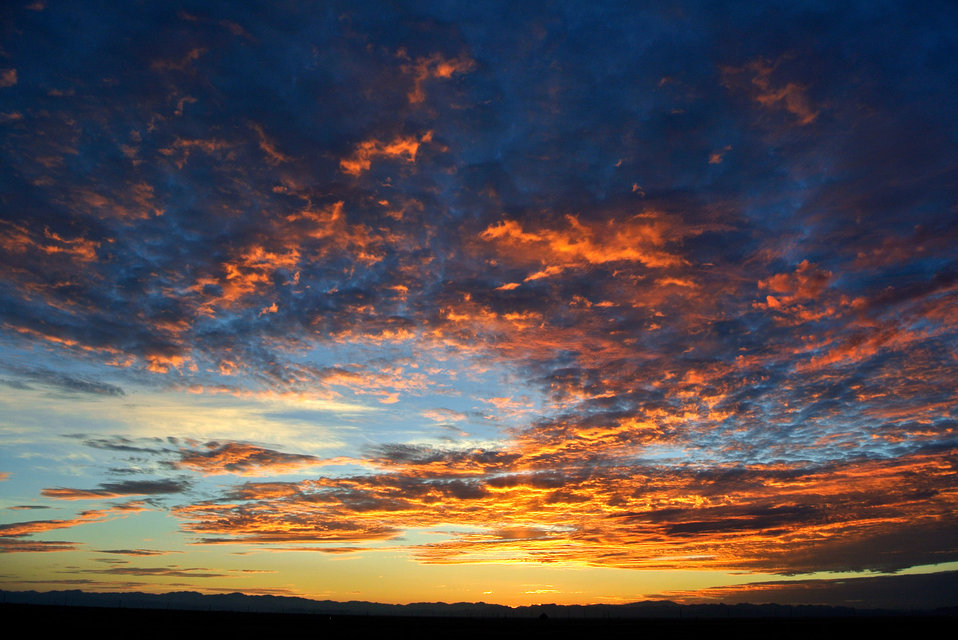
Arizona sunrise 7-22-12.